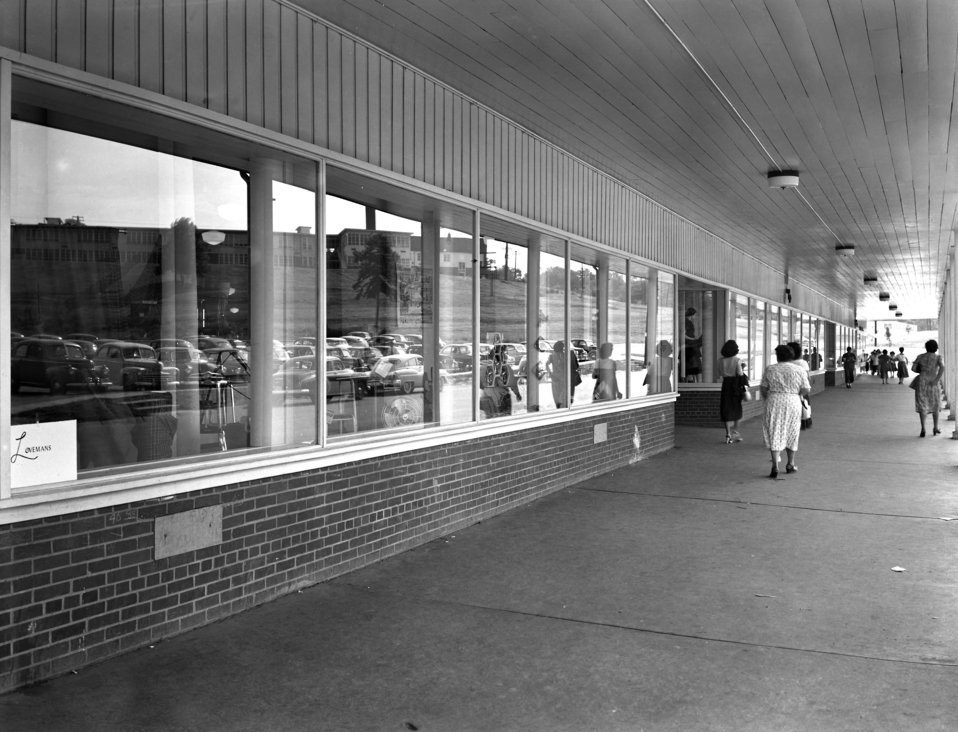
Lovemans Dept. Store Jackson Square Oak Ridge 1950

6121 DOE photo Ed Westcott 8-8-1950 Oak Ridge Tennessee